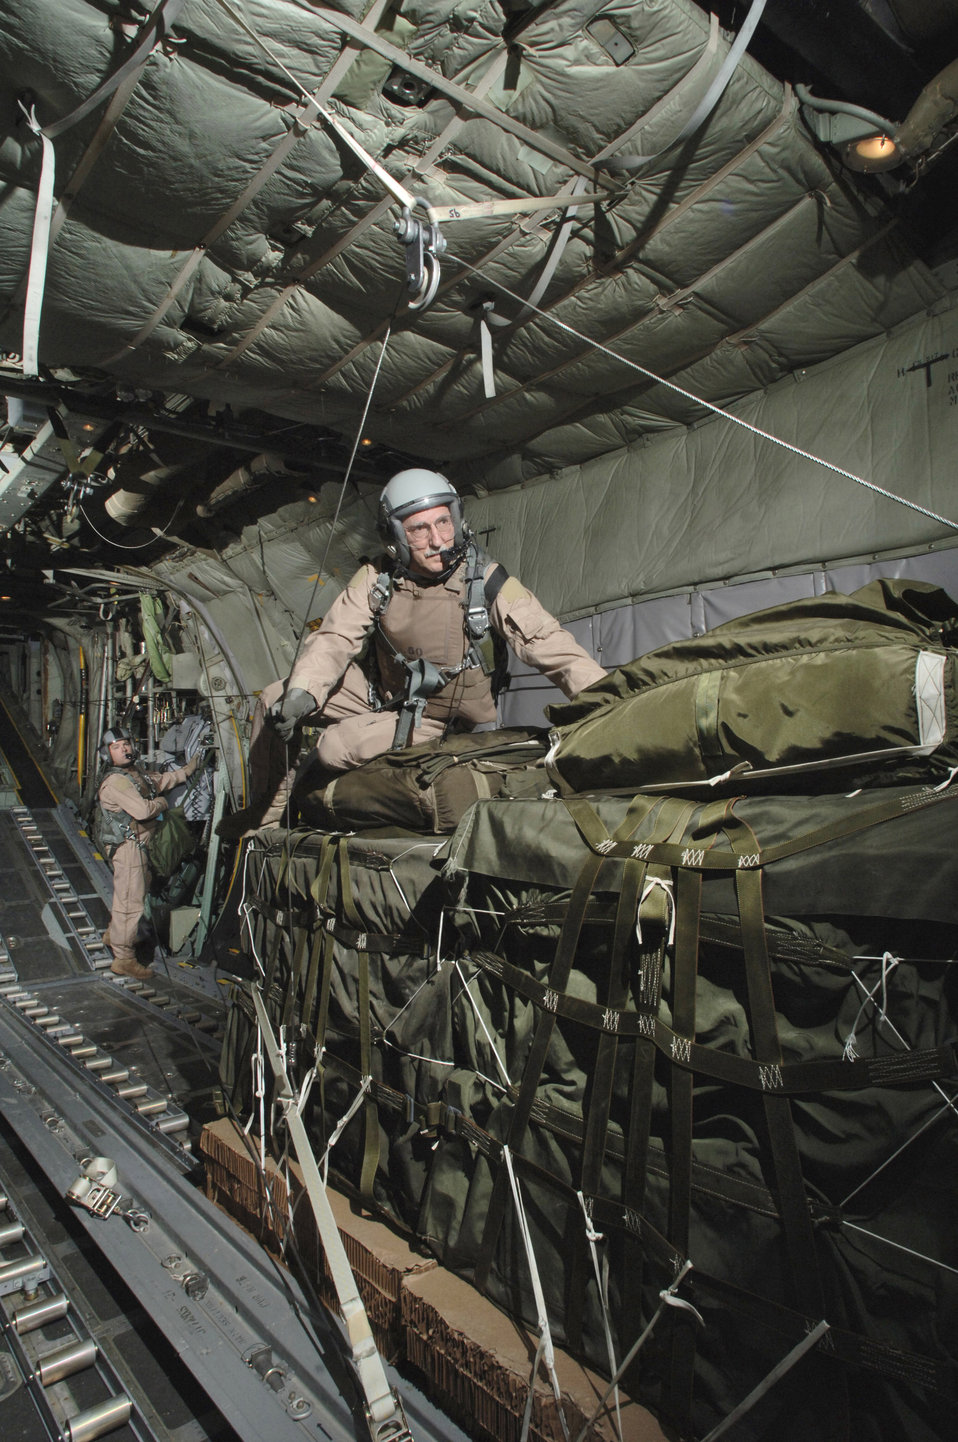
Drop zone

Senior Master Sgt. Ted Poplarchik rigs a second group of containerized delivery system pallets for an operational airdrop re-supply mission to the second of three forward operating bases Thursday, March 9, 2006. Sergeant Poplarchik is with the 144th Airlift Squadron, Kulis Air National Guard Base, Alaska and deployed to the 774th Expeditionary Airlift Squadron, Bagram Air Base, Afghanistan.